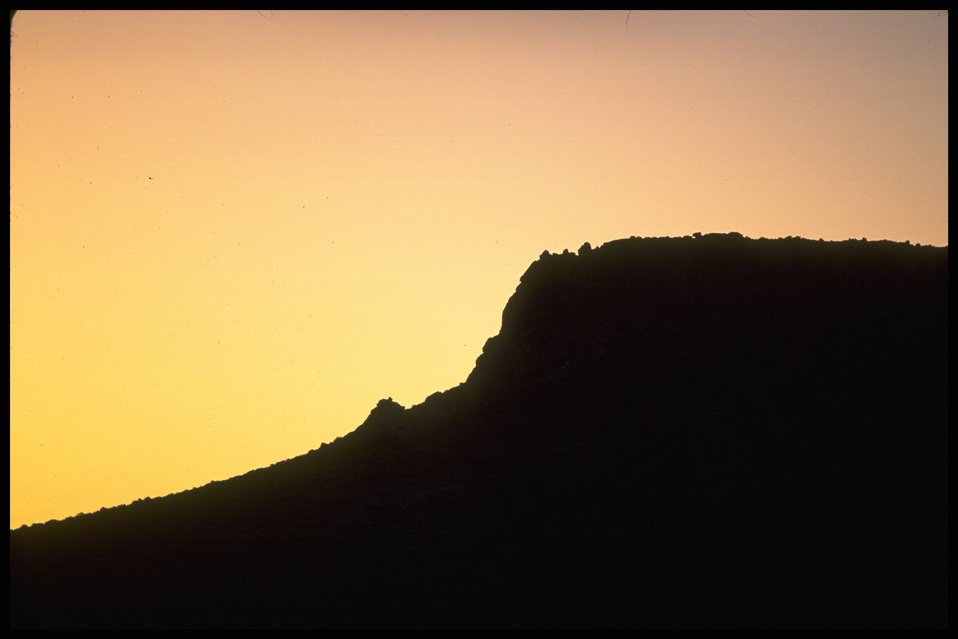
Lakeview District sunrise.